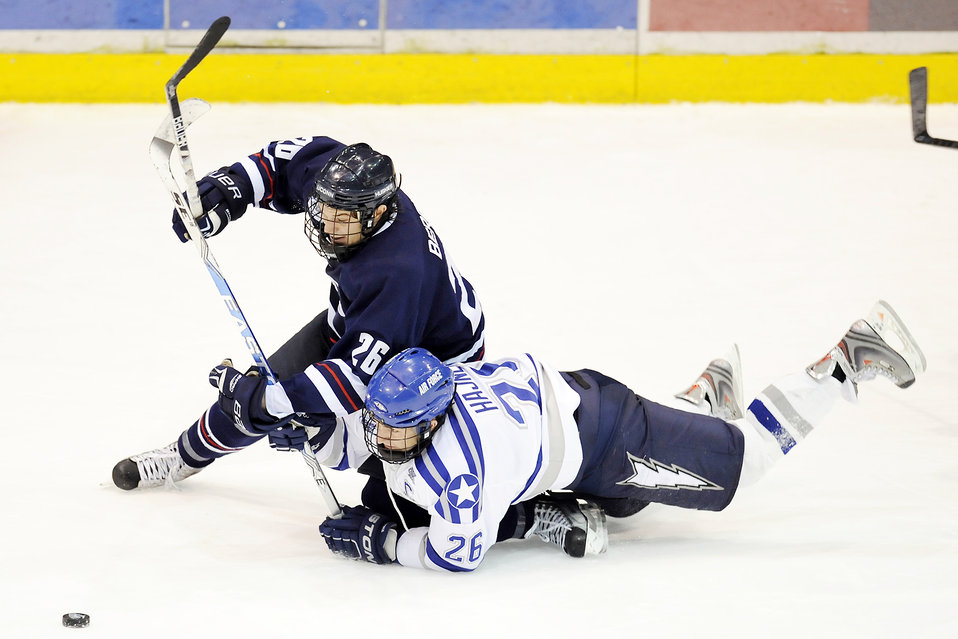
Falcons outskate UConn Huskies

Air Force Academy senior forward Jeff Hajner battles for control of the puck with the University of Connecticut's Stevie Bergin as Air Force beat UConn 2-1 at the Academy's Cadet Ice Arena Jan. 8, 2010. The following evening, Air Force and UConn skated to a 2-2 overtime tie. Air Force fell into a tie for second place in the Atlantic Hockey Association.